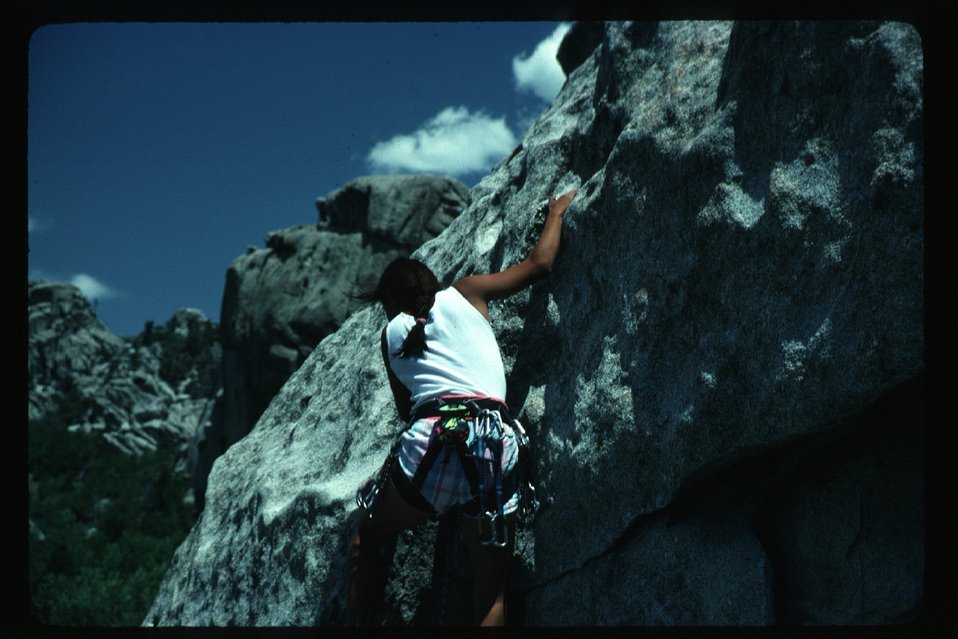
Rock climber Burley City of Rocks Burley Field Office USRD Upper Snake River District